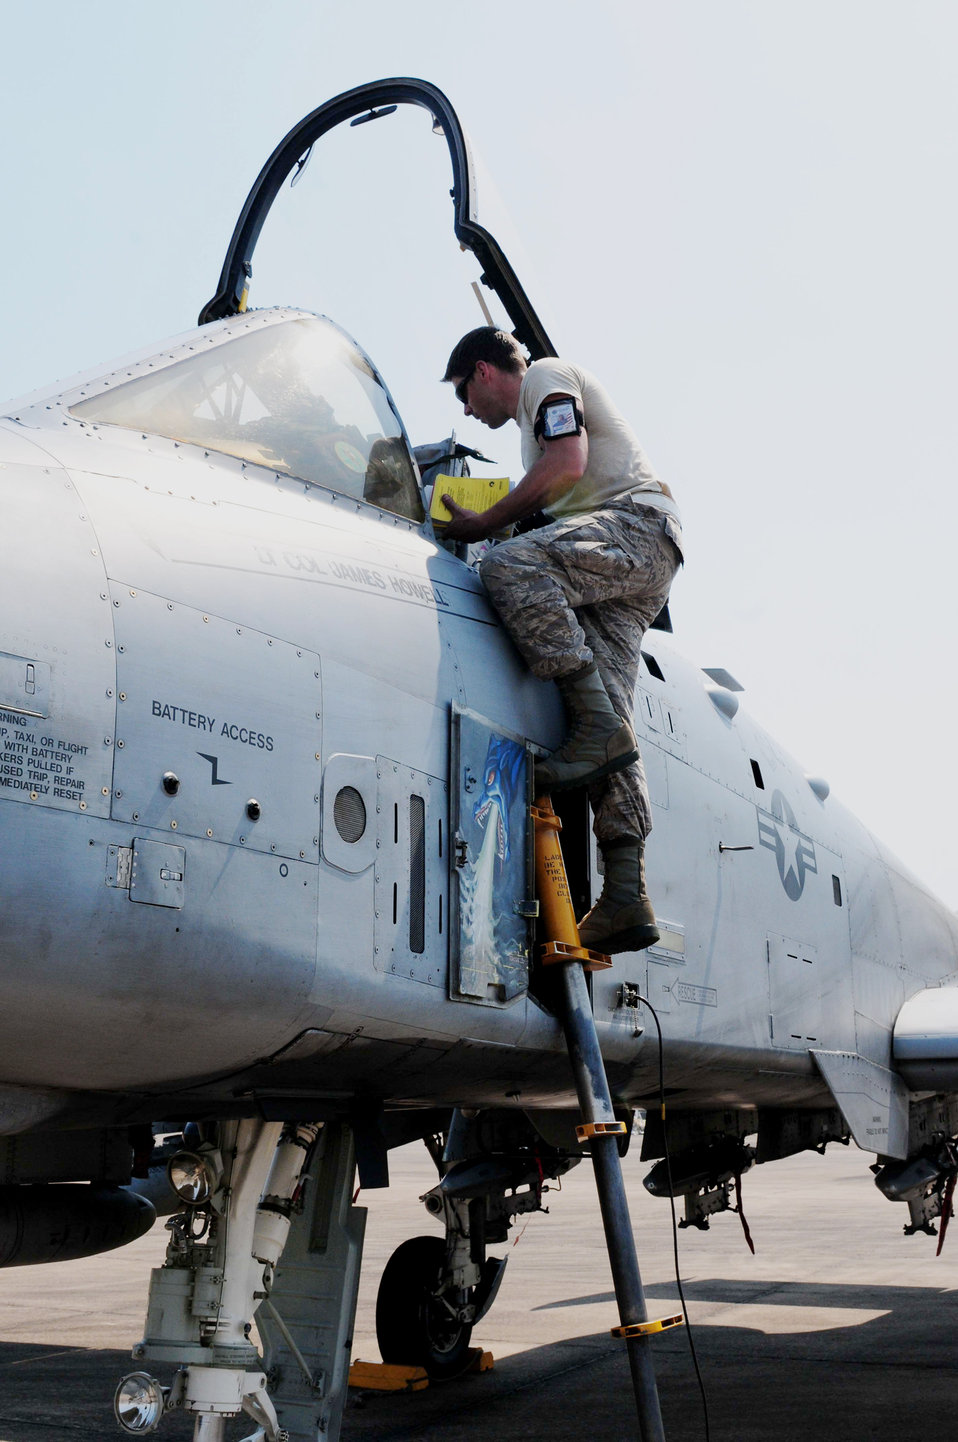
Airmen take flight at Cope Tiger

Senior Airman Graeme Clark prepares the cockpit of an A-10 Thunderbolt II March 4, 2010, for pilots participating in Cope Tiger 2010 at Udon Thani Royal Thai Air Force Base, Thailand. Airman Clark is deployed to the exercise from Osan Air Base, South Korea.